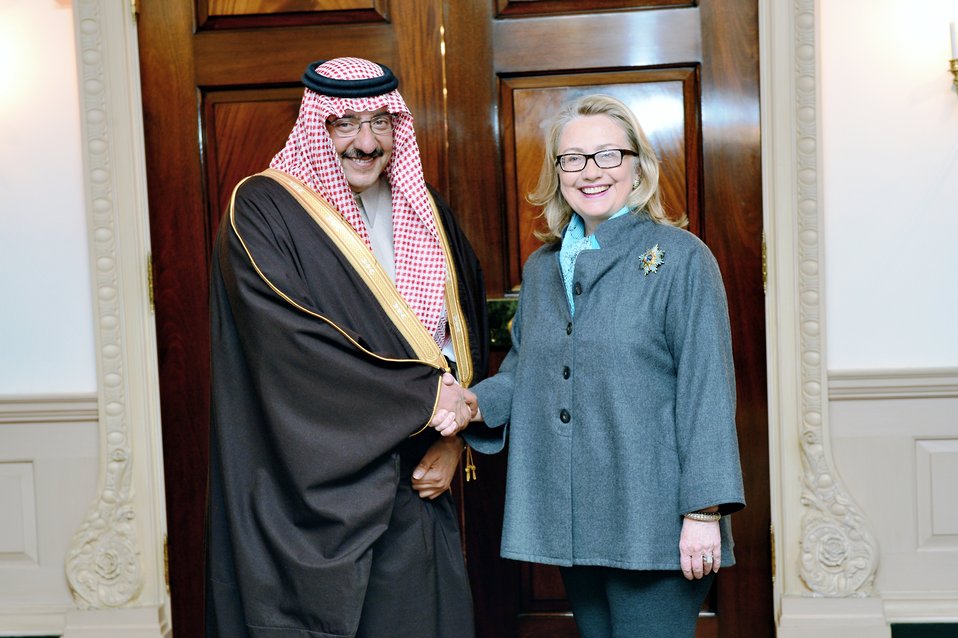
Secretary Clinton Shakes Hands With Prince Mohammed bin Naif bin Abdulaziz

U.S. Secretary of State Hillary Rodham Clinton shakes hands with Interior Minister of Saudi Arabia, Prince Mohammed bin Naif bin Abdulaziz, at the U.S. Department of State in Washington, D.C., January 16, 2013.